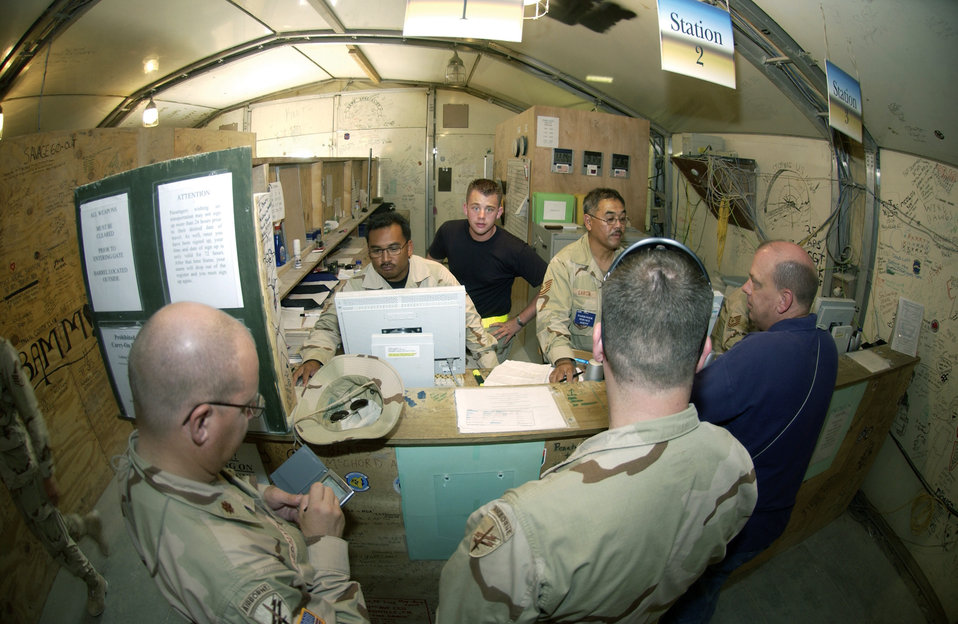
Pax terminal gets Airmen where they need to be

SOUTHWEST ASIA -- People wait at the passenger terminal customer service desk at a forward-deployed location Sept. 22. The terminal is run by Airmen of the 8th Expeditionary Air Mobility Squadron.